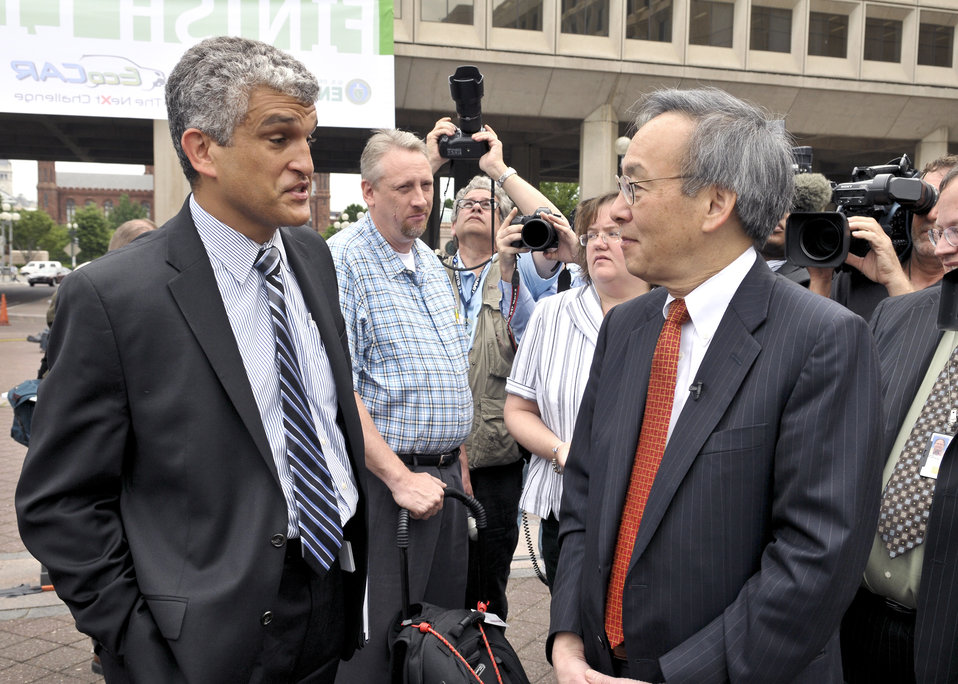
EcoCAR Challenge Finish Line 8 of 8

US Department of Energy Secretary Steven Chu and Michael Bly, head of Advanced Vehicle and Battery Technologies for General Motors, discuss some of the innovative solutions used for the EcoCAR Challenge.